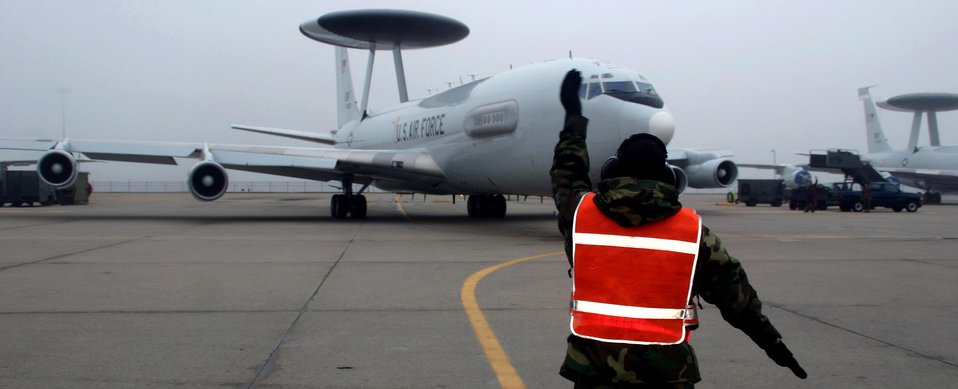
Tinker Airmen resume Sentry in Southwest Asia

An Airman from the 552nd Aircraft Maintenance Squadron marshals the first of several aircraft out of its parking spot and on its way to support Operations Enduring Freedom and Iraqi Freedom March 28 at Tinker Air Force Base, Okla.